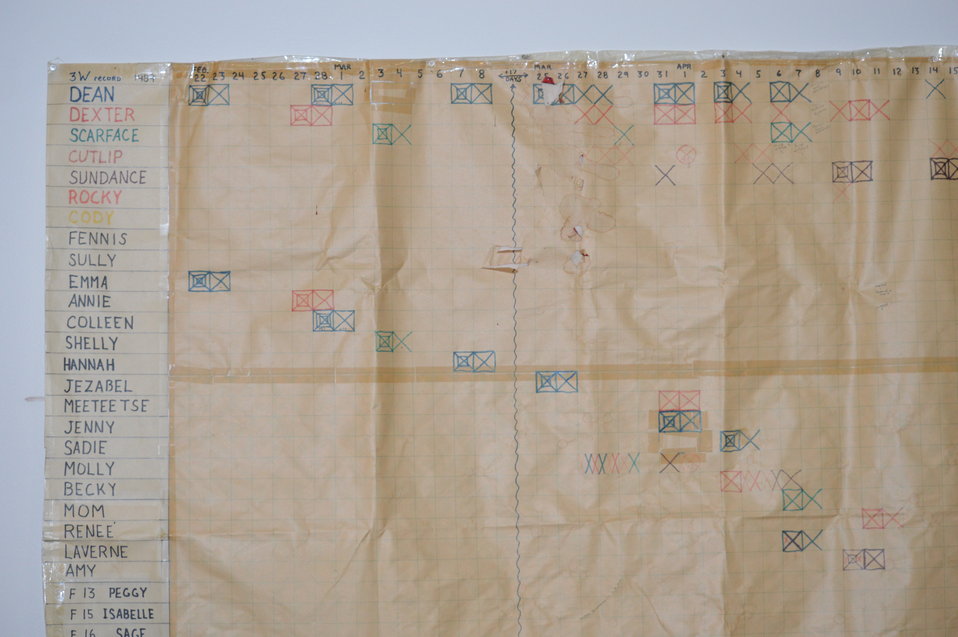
Interns visit the NBFFCC

First geneology chart created for the Black-footed ferret recovery program. In the summer of 2012, USFWS Region 6 interns visited the National Black-footed Ferret Conservation Center (NBFFCC) in Colorado to learn how the program reintroduces the endangered Black-footed ferret back into its native habitat.